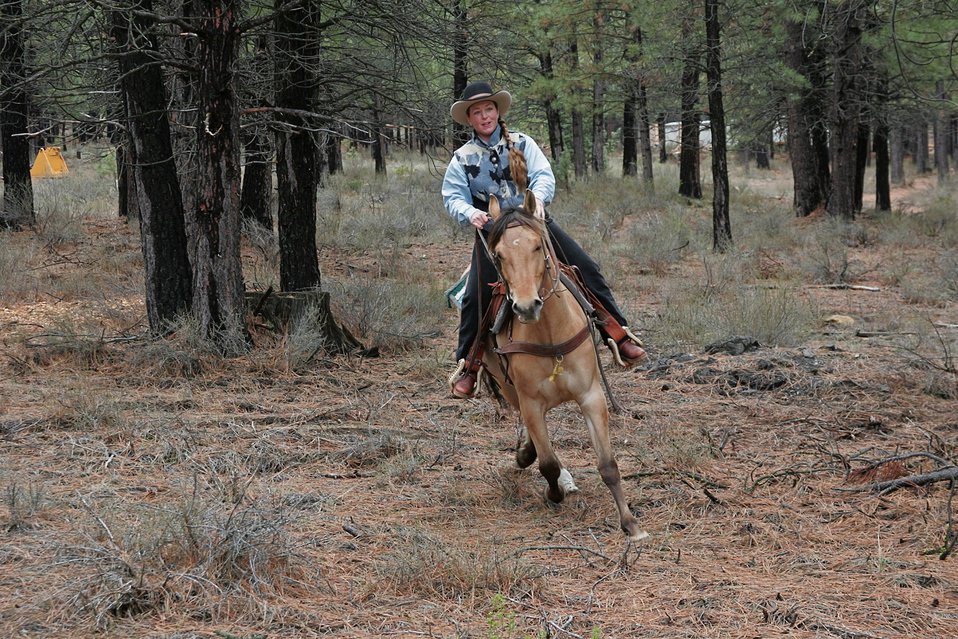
Horse trainer, Kitty Lauman and Spirit demonstrate the results of Spirits training.